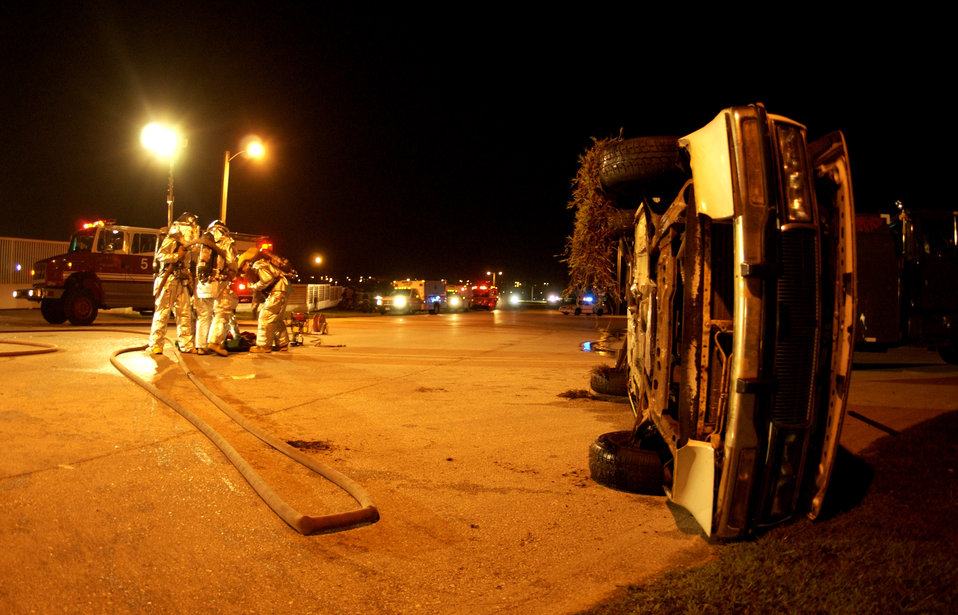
Exercise at Andersen

Firefighters from the 36th Civil Engineer Squadron respond to a simulated vehicle accident at Andersen Air Force Base, Guam, during the Beverly Palm 06-07 exercise on July 10. The exercise is held several times a year to sharpen the mobility and wartime capabilities of Airmen.